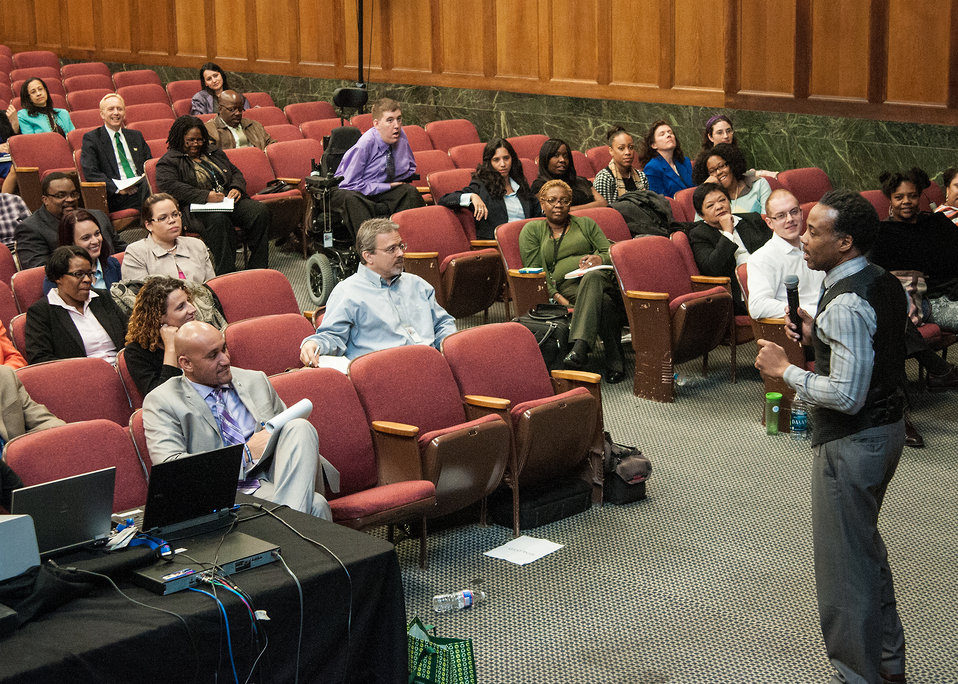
U.S. Office of Personnel Management, Training, Compliance and Strategy Office of Diversity Inclusion Deputy Director Bruce Stewart discusses Strategies to Increase Collaboration between Federal agencies at the First Annual All Hands Special Emphasis Program Managers (SEPM) Meeting at the U.S. Department of Agriculture Jefferson Auditorium in Washington, D.C. on Wednesday, Mar. 13, 2013.